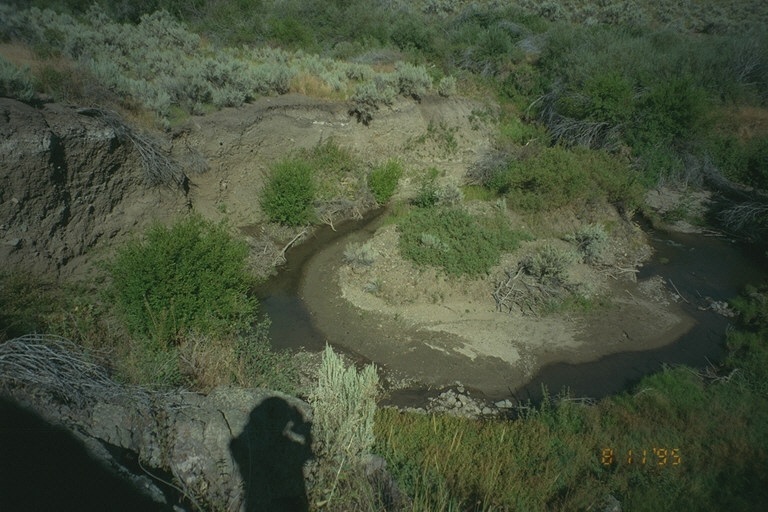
Riparian area Public Lands Salmon Field Office UCSC Upper Columbia Salmon Clearwater District